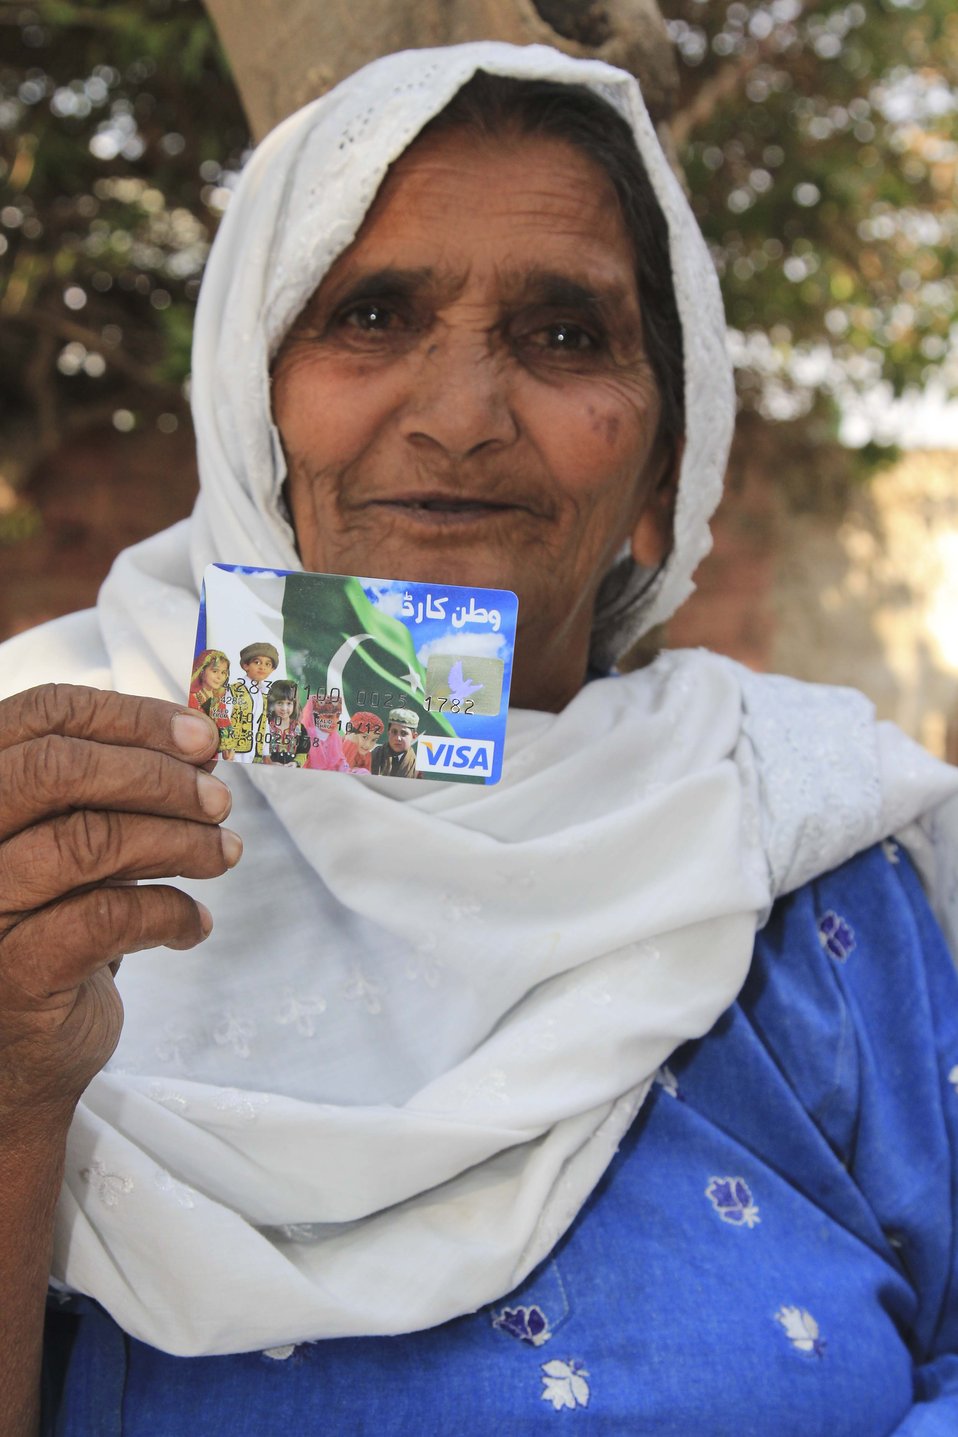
Citizens Damage Compensation Program